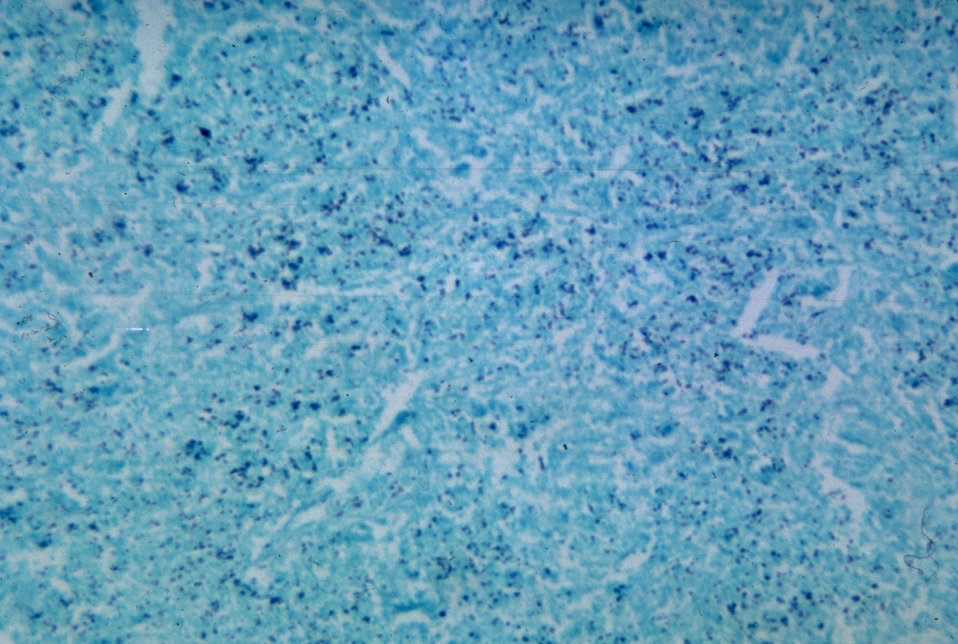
This micrograph depicts histopathologic changes associated with Histoplasmosis of the lung using methenamine silver stain.